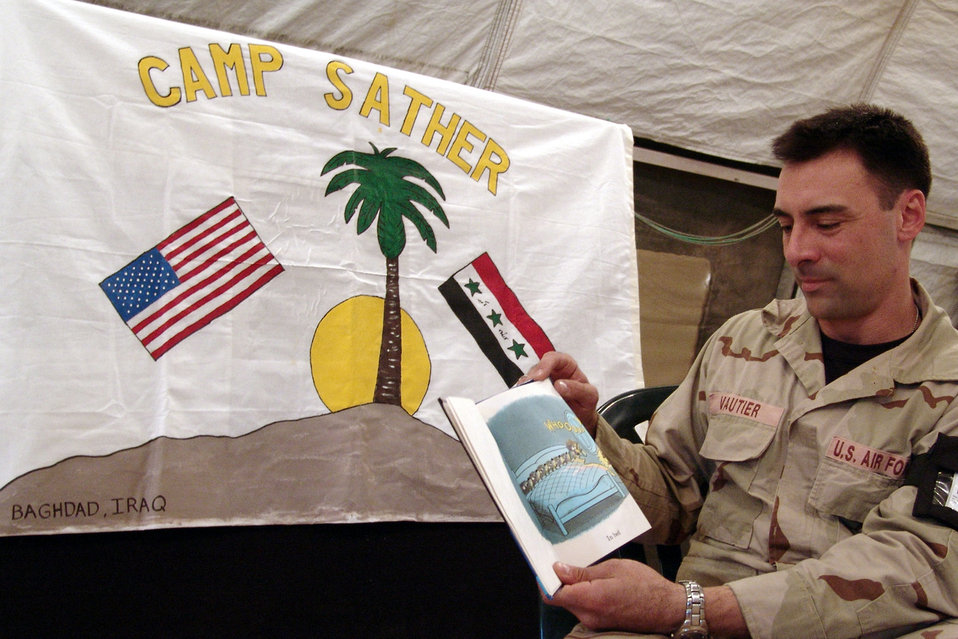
Airmen make storybook videos for children

BAGHDAD, Iraq -- Staff Sgt. David Vautier reads